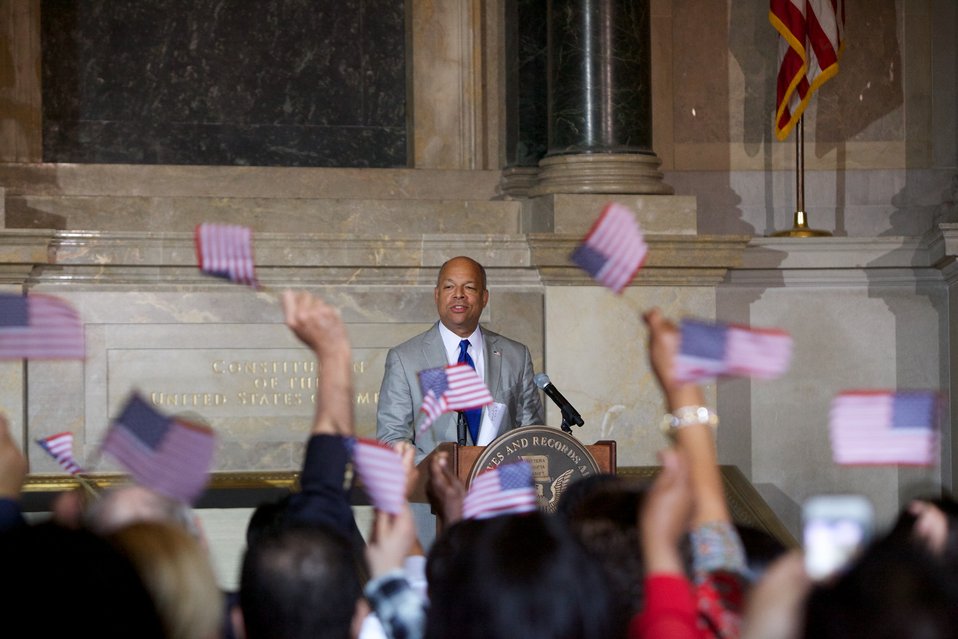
Naturalization Ceremony with Michelle Obama